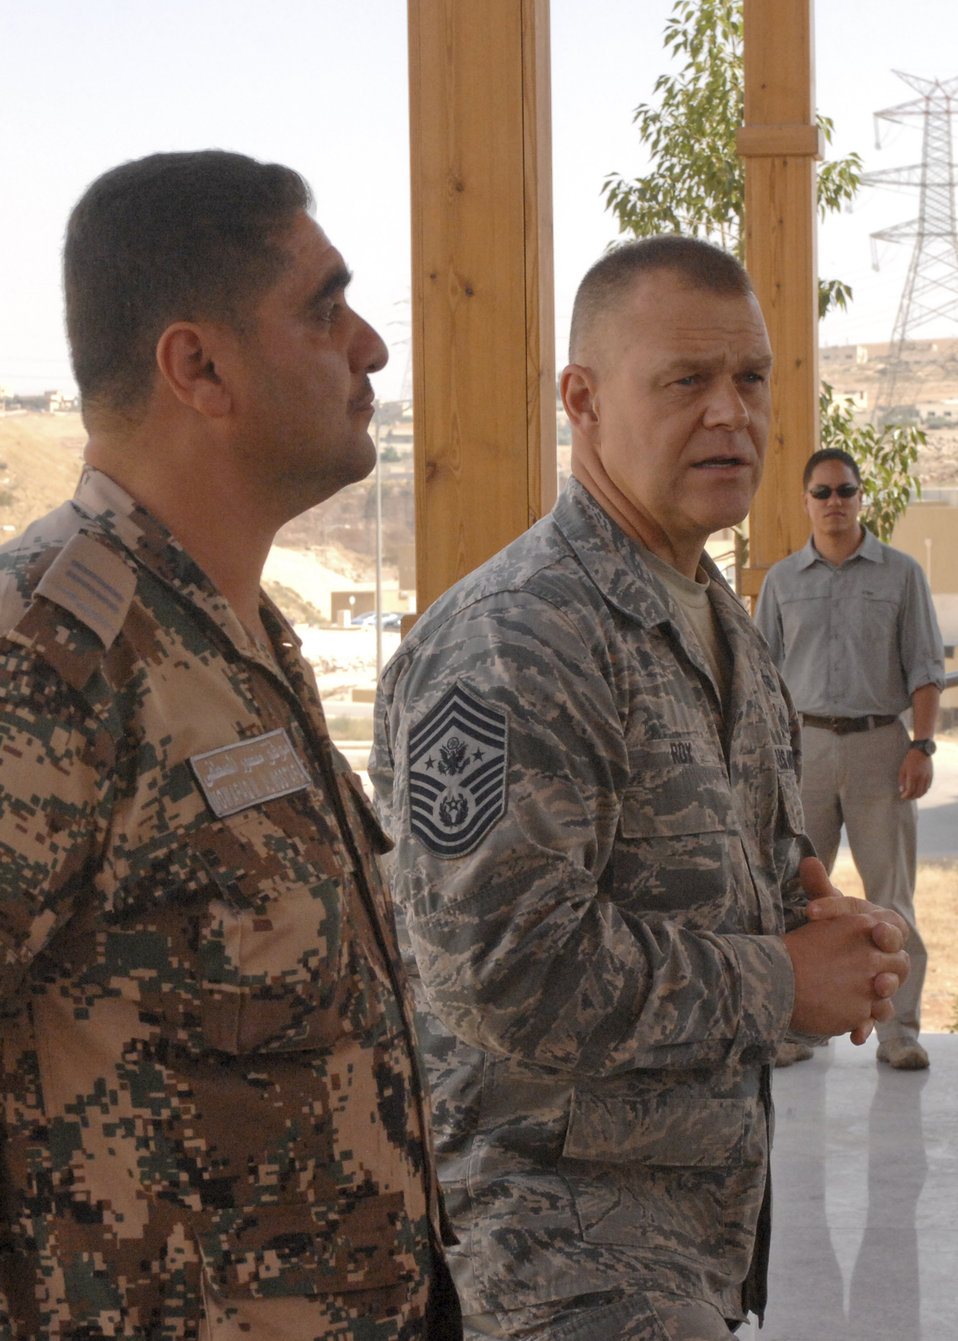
CMSAF visist in Jordan supporting exercise

Chief Master Sgt. of the Air Force James A. Roy and Mowafaq Mohammad Al-Mostafa, chief master sergeant of the Royal Jordanian Air Force, address a mixed crowd of U.S airmen and coalition partners forward deployed to Jordan in support of Exercise Eager Lion 12 May 19, 2012, Amman, Jordan. Eager Lion 12 is a recurring, multinational exercise designed to strengthen military-to-military relationships and interoperability among 19 partner nations as they navigate scenarios simulating future complex national security challenges.